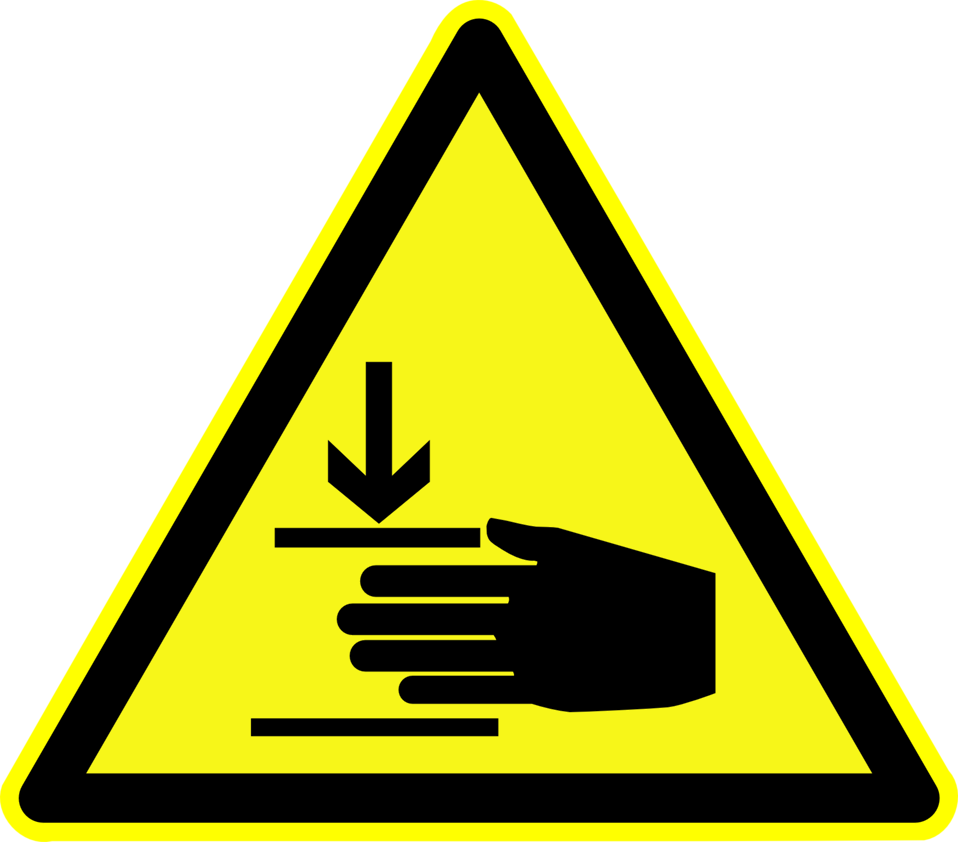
Deutsch: Warnung vor Handverletzungen, Warnzeichen D-W027 nach DIN 4844-2 Hand injury, warning sign D-W027 according to German standard DIN 4844-2 Français : Risque de blessure à la main ; signe d'avertissement D-W027 selon la norme allemande DIN 4844-2.